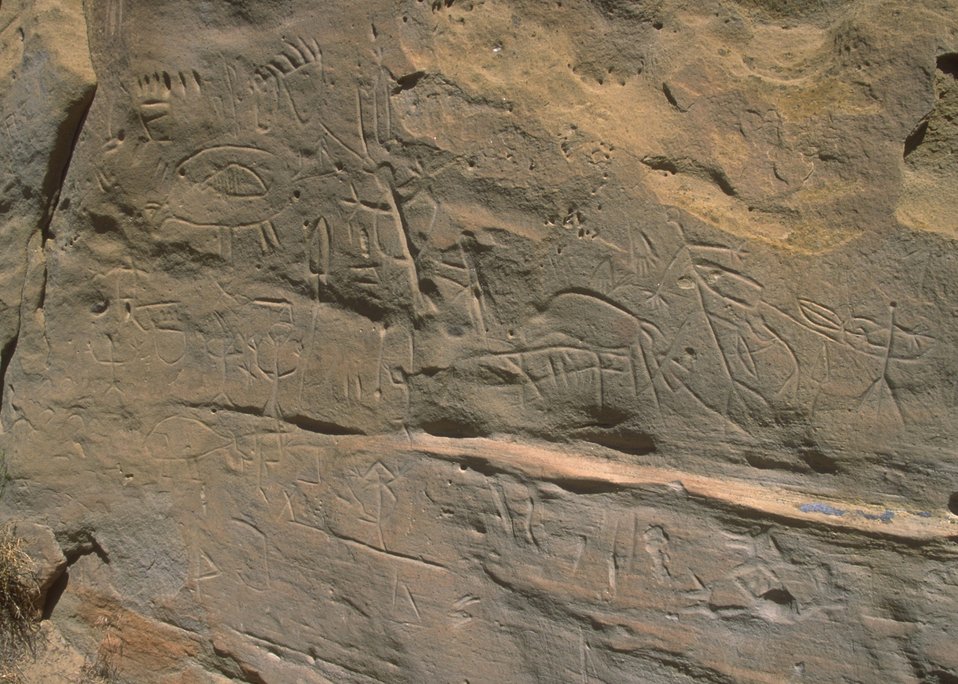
White Mountain Petroglyphs, Rock Springs Field Office.